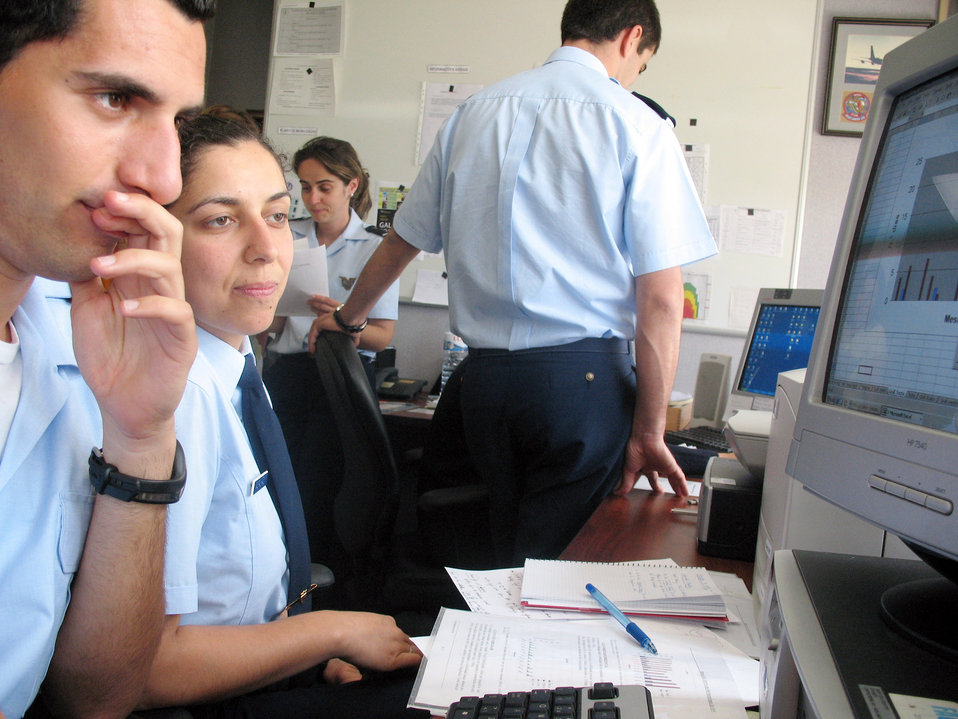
Weather flight keeps pilots safe

American and Portuguese servicemembers monitor the weather at 17 European locations, to provide up-to-the-minute information for pilots passing through June 1 at Lajes Field, the Azores. Before any flight can take off from Lajes Field, members of the 65th Operations Support Squadron Weather Flight provide an in-depth briefing covering the weather at the base, the destination, and all points in between.